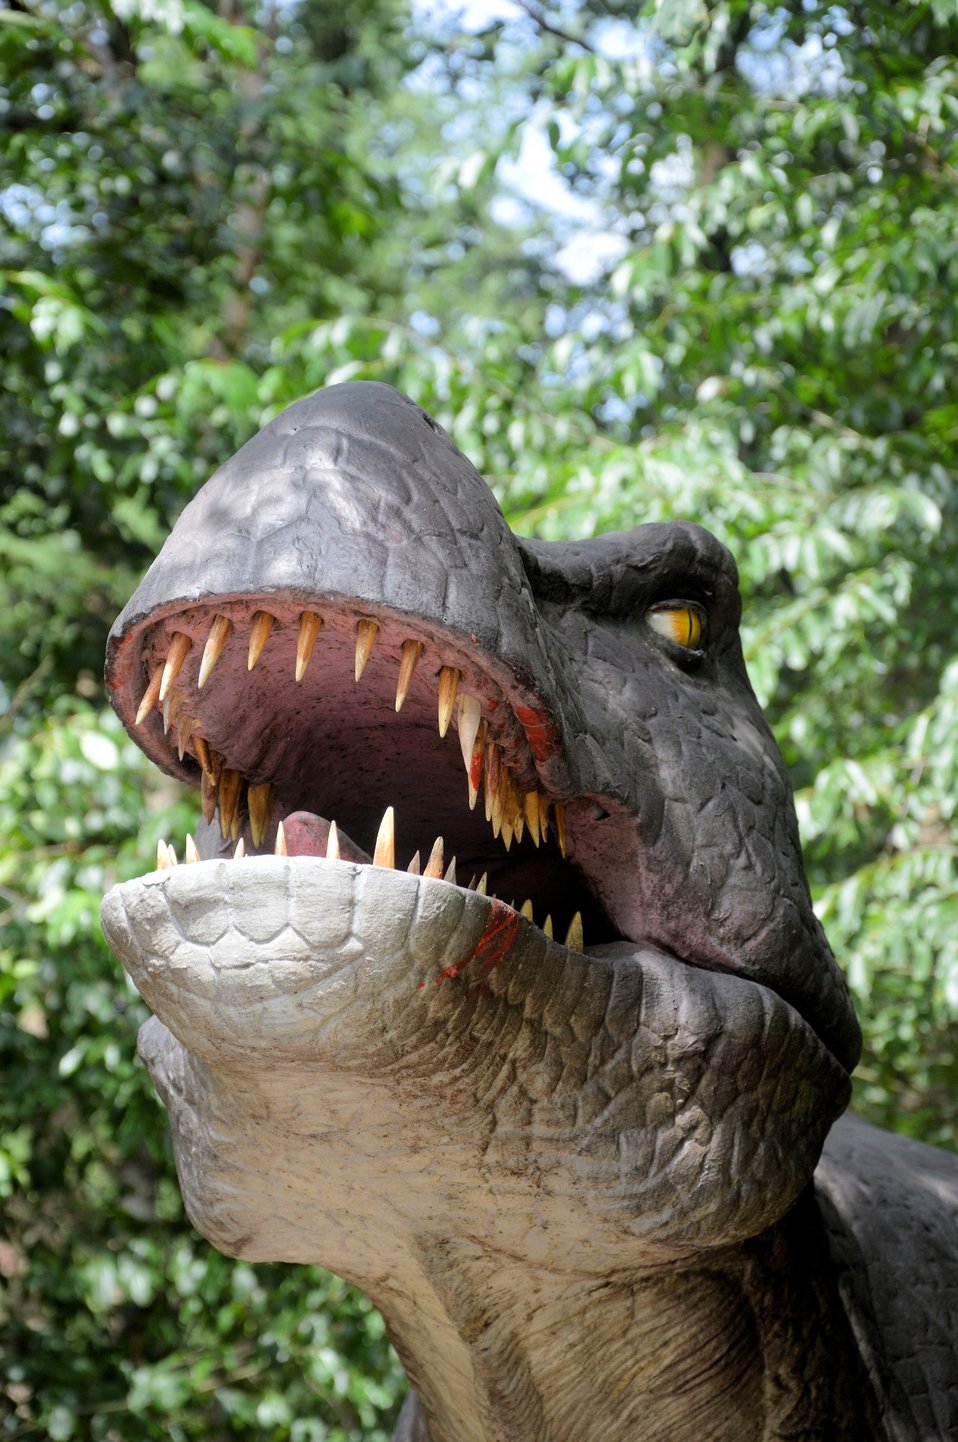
A prehistoric animal

Photo with a prehistoric animal.